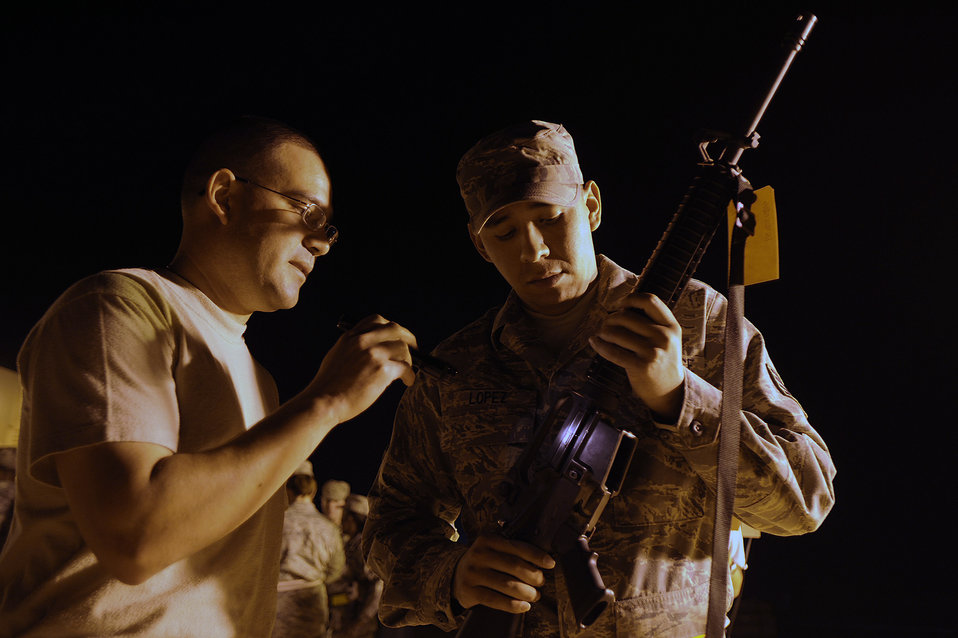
Air Force to save millions by prepositioning weapons

Tech. Sgt. Chris Atkinson shows Staff Sgt. Joseph Lopez the dust cover on his M-16 rifle during a force protection arming drill at Joint Base Balad, Iraq. Beginning with air and space expeditionary force cycle 7 and 8 in January and February, more than 3,000 deploying Airmen will get their weapons from the person they are replacing within the U.S. Central Command area of responsibility instead of bringing weapons with them from their home stations. A U.S. Air Forces Central weapons prepositioning initiative will save the service $1.2 million every four months and will make travel to and from the area of responsibility easier for deploying Airmen by reducing the amount of baggage they need to bring.